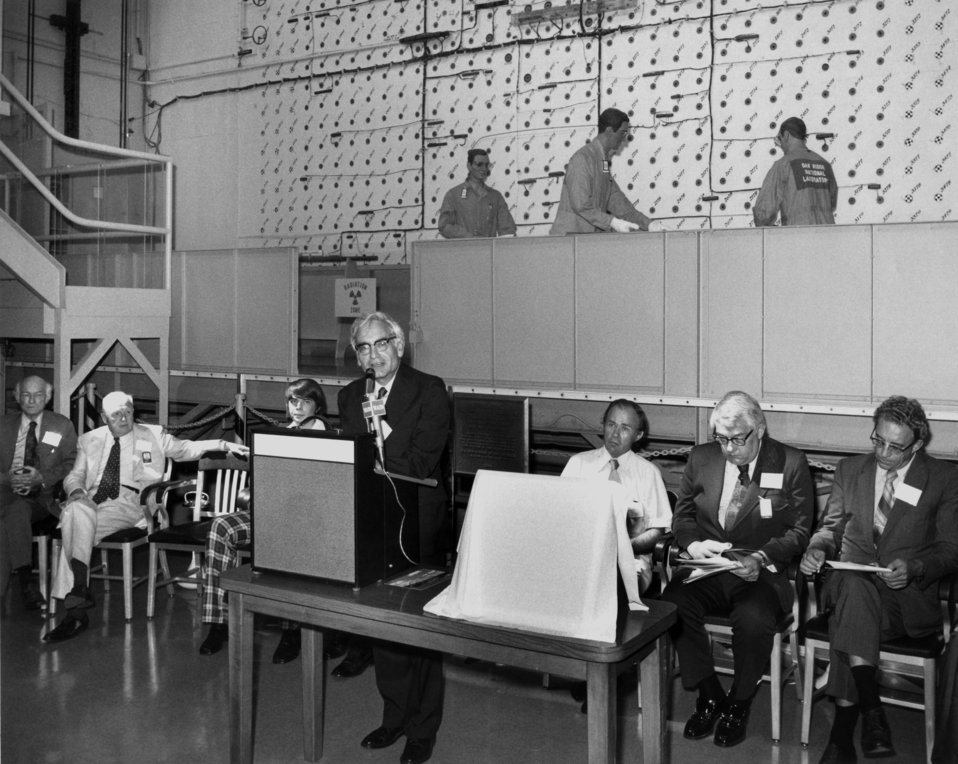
Graphite Reactor tour with speaker Alvin Weinberg Oak Ridge National Laboratory Oak Ridge

73-527-4 DOE photo by Frank Hoffman

Graphite Reactor tour with speaker Alvin Weinberg Oak Ridge National Laboratory Oak Ridge Tennessee June 1973